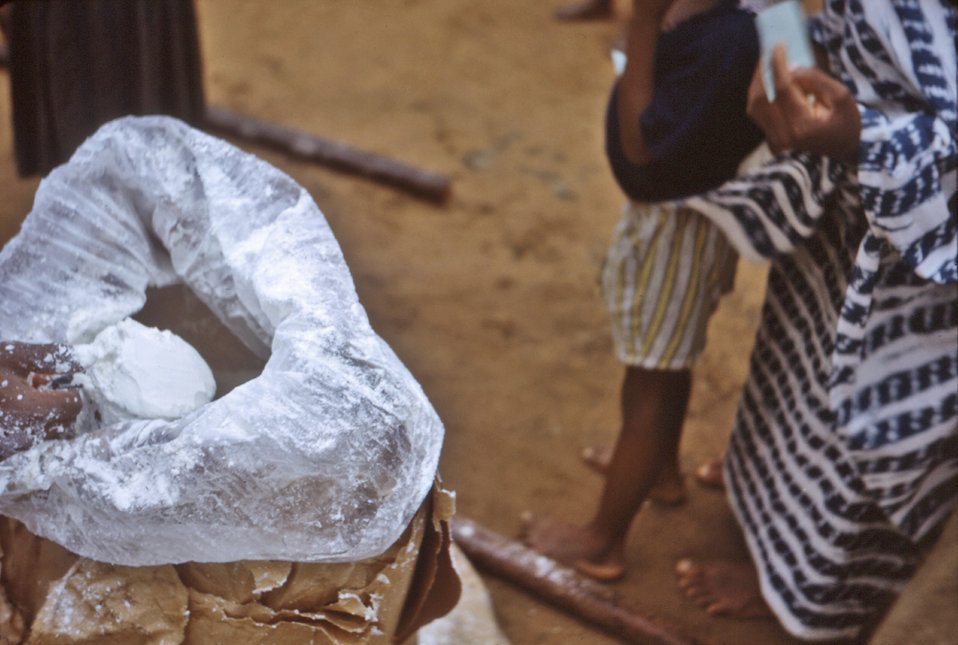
During the Nigerian-Biafran civil war refugee relief efforts of the late 1960s, the CDC assisted in the distribution of nutritious foods such as the powdered milk pictured here, contained in a plastic-reinforced bag. Powdered milk was integral in combating a condition termed kwashiorkor, a state malnutrition due to a protein deficiency.